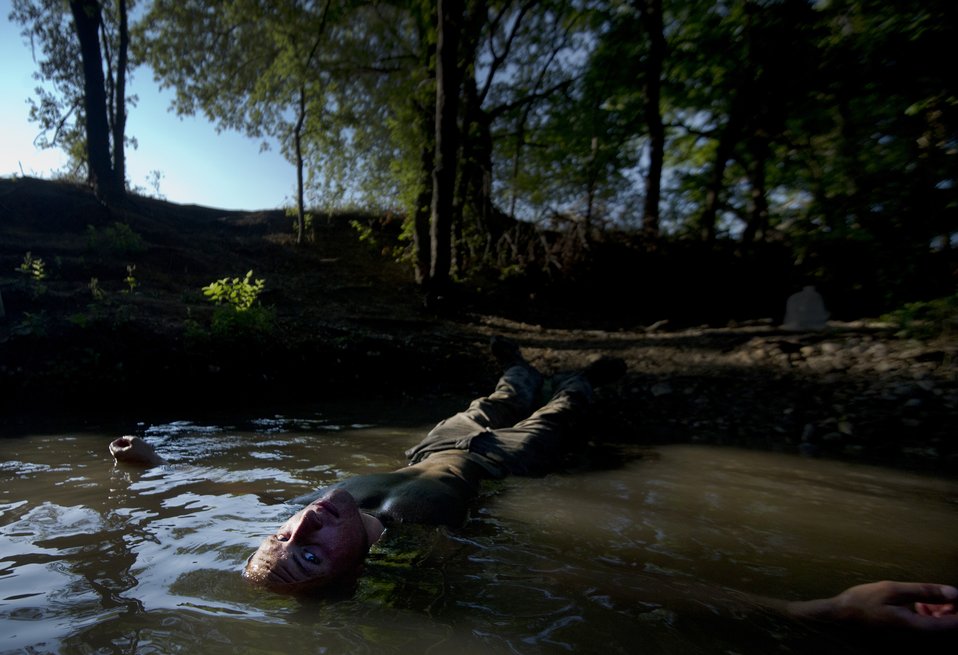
Cleansing waters

An Airman cleans himself off during the Air Force Pararescuemen Indoctrination Course, known as “Hell Week”, Sept. 6, 2011, at Lackland Air Force Base, Texas. During Hell Week Airmen simulate a real-world mission involving air, ground and water survival. Airmen must complete 62 weeks of training in addition to basic military basic to become an Air Force pararescueman.